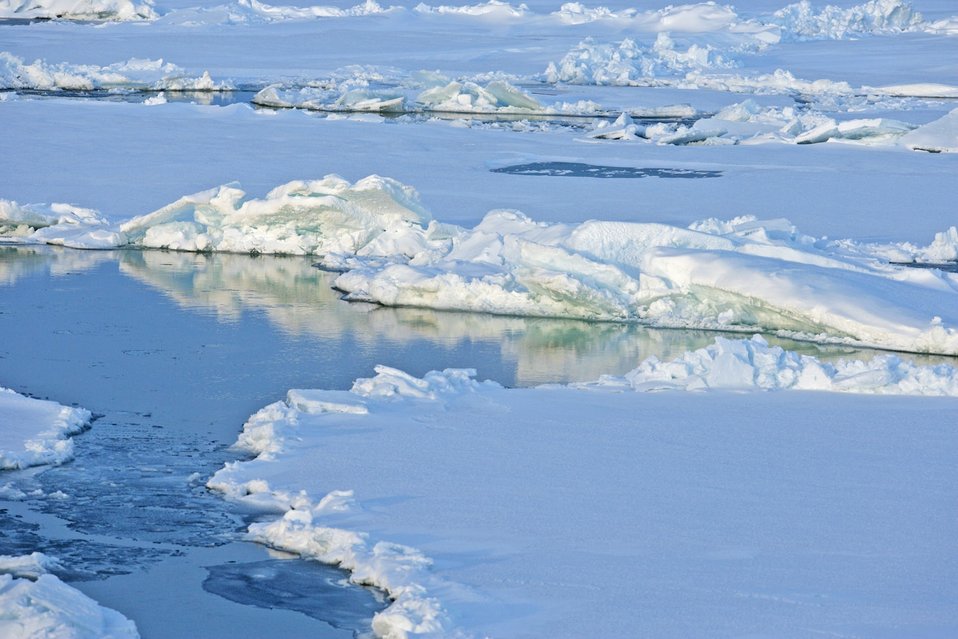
Ice floes.